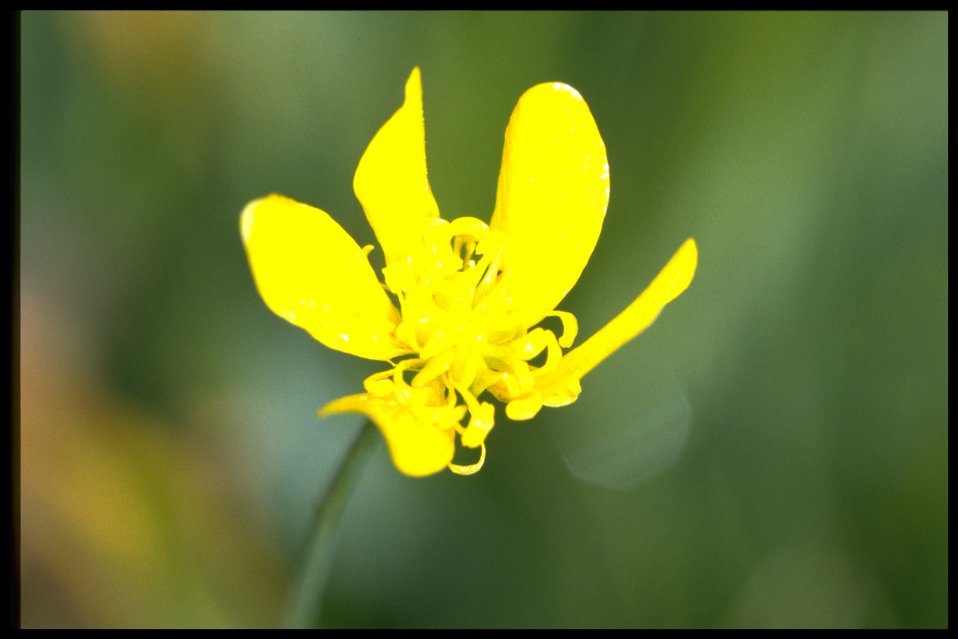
Closeup shot of Ranunculus sp.